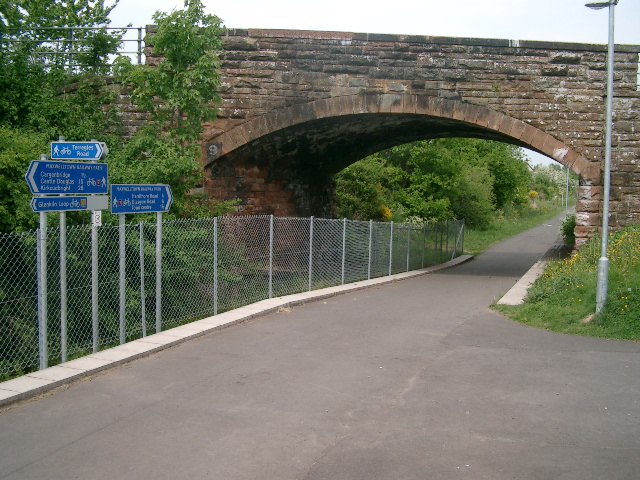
The hump backed bridge at Terregles Road and the cycle path that replaced the railway line